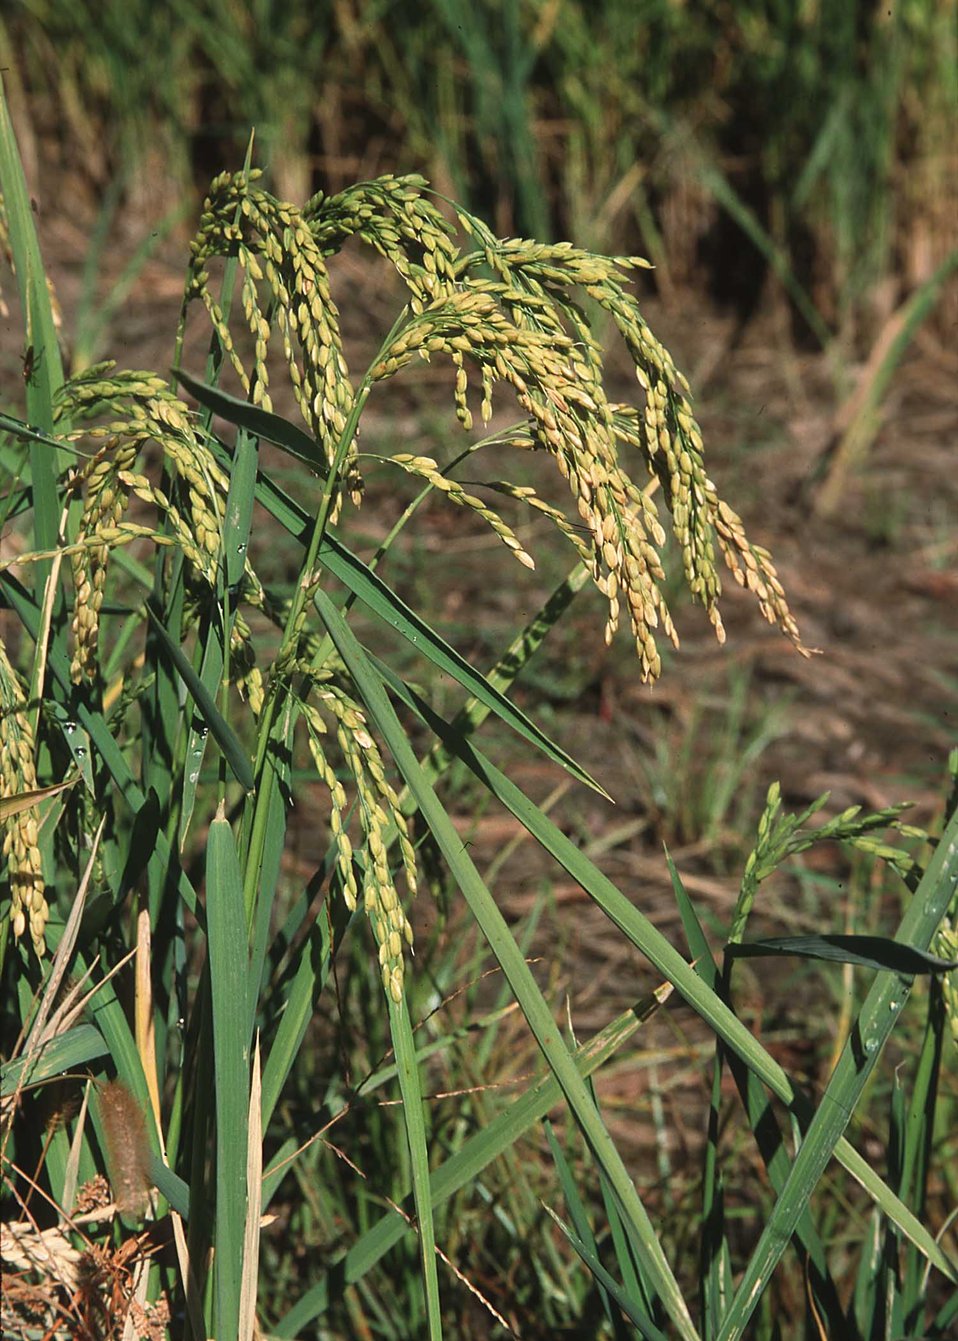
Rice plant head.